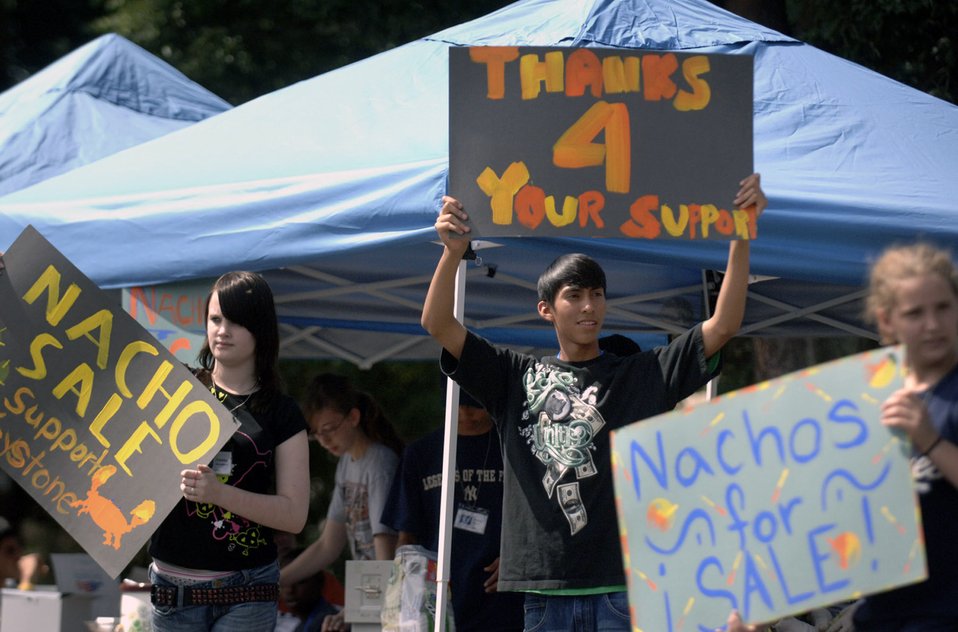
Keystone leadership summit reaches out to USAFE teens

Fifteen-year-old Andres Gaytan is flanked by 14-year-old Tabitha Woodburn (left) and 13-year-old Hailey Poiani during a fundraising project for the European Keystone Club Leadership Summit taking place at Ramstein Air Base, Germany. In the course of two days, the teens raised $900 in nacho sales that will be donated to an international charity. More than 100 teens from 11 U.S. Air Forces in Europe bases attended the week long summit at Ramstein AB from July 28 to Aug. 1.